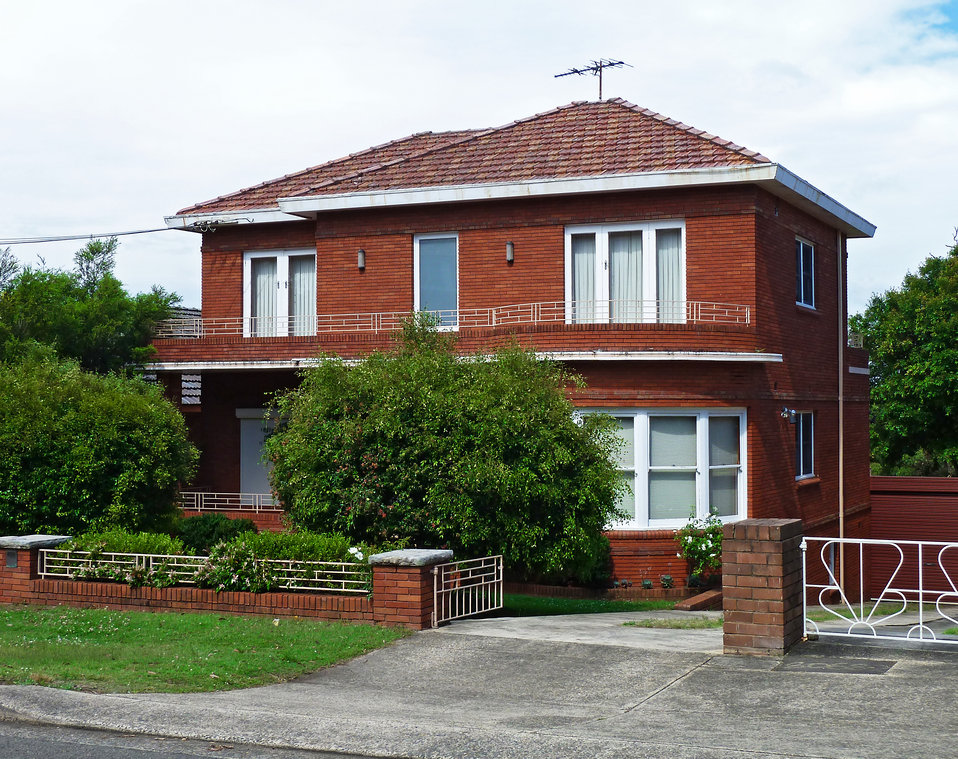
10 Castle Street, Blakehurst, New South Wales, Australia.